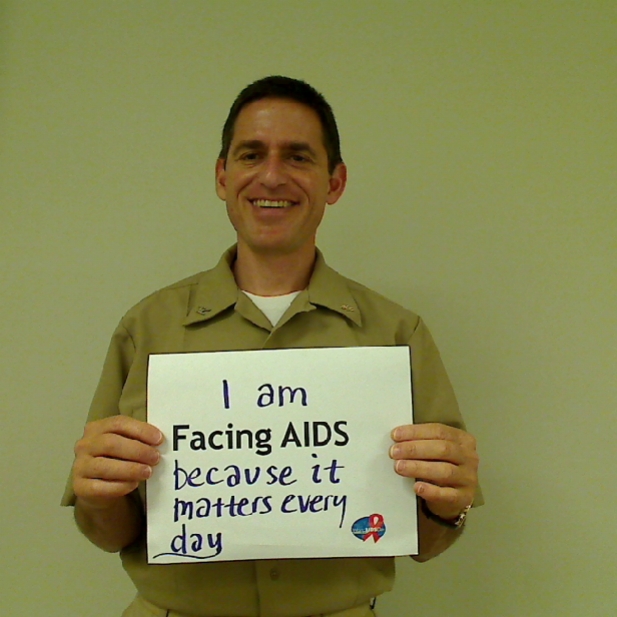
I am Facing AIDS because it matters every day